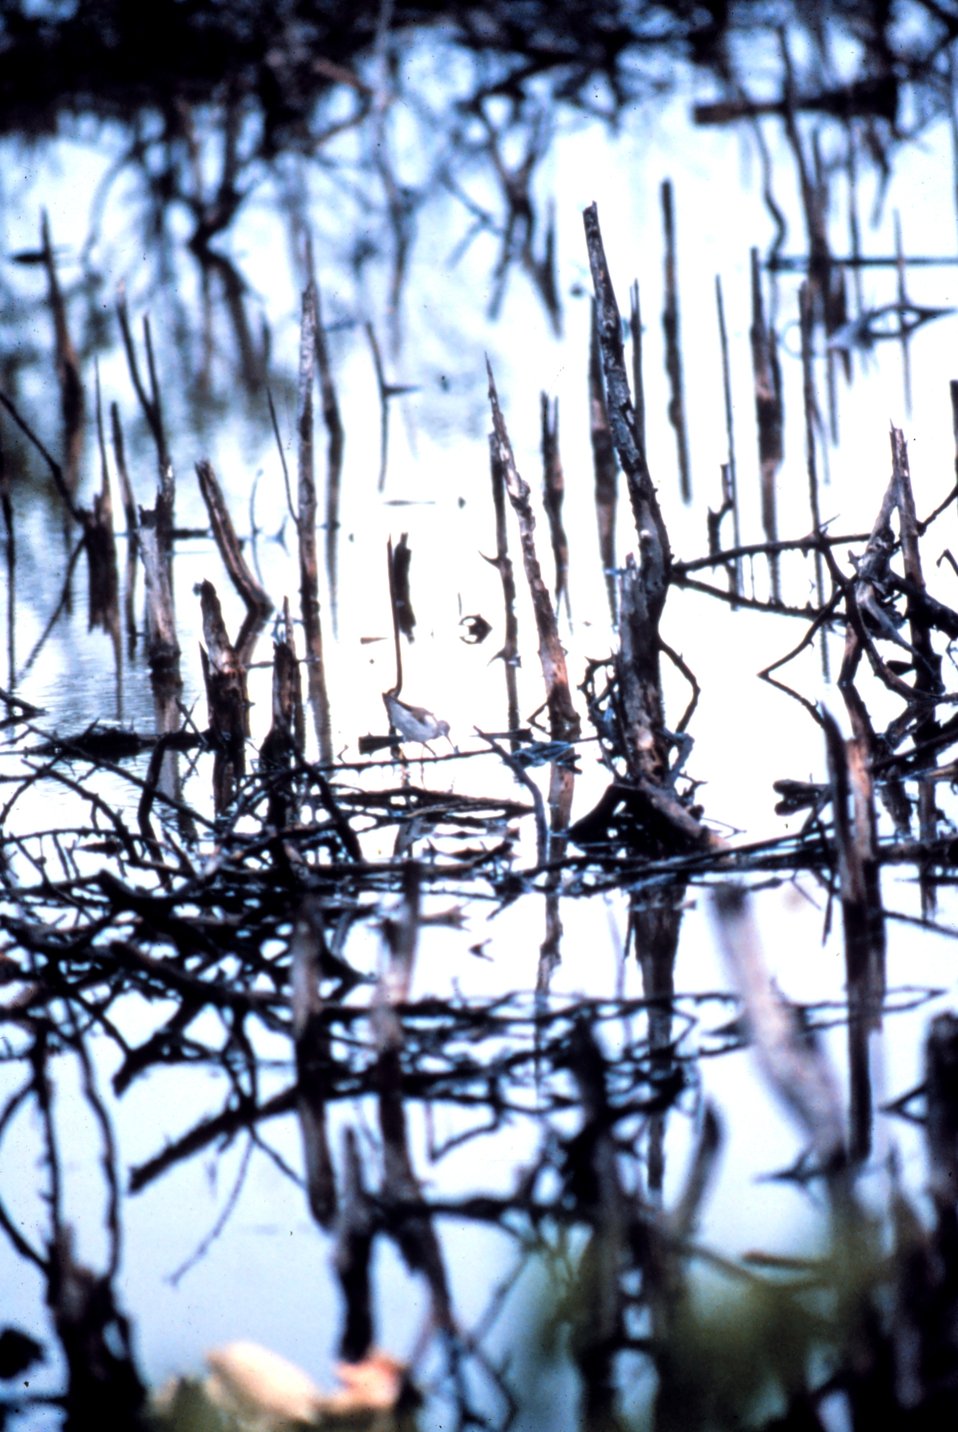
Jobos Bay National Estuarine Research Reserve. Wetland areas act as reservoirs that filter nutrients and water.